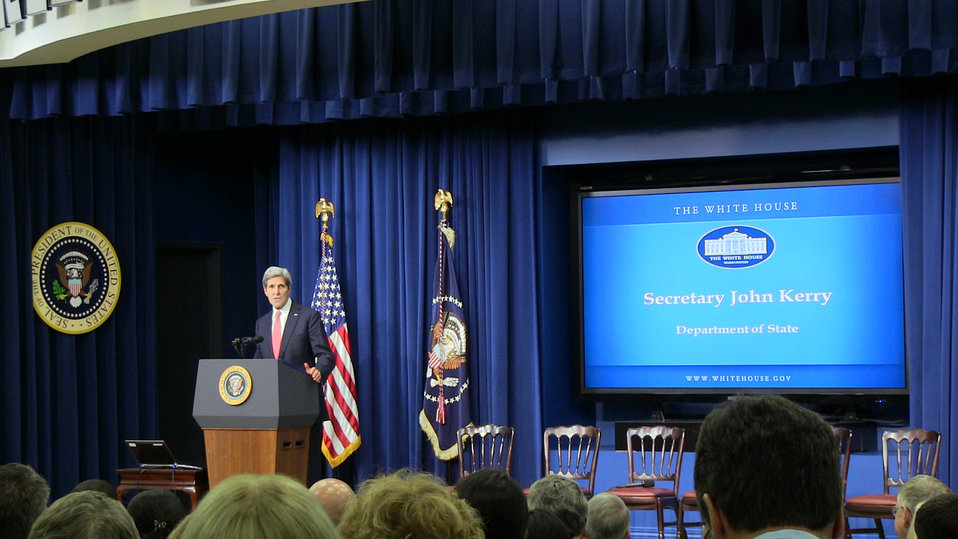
Secretary Kerry Delivers Remarks at President Obama's World AIDS Day Event

U.S. Secretary of State John Kerry delivers remarks at President Obama’s World AIDS Day event at the White House in Washington, D.C., on December 2, 2013. [AIDS.gov photo/ Public Domain]